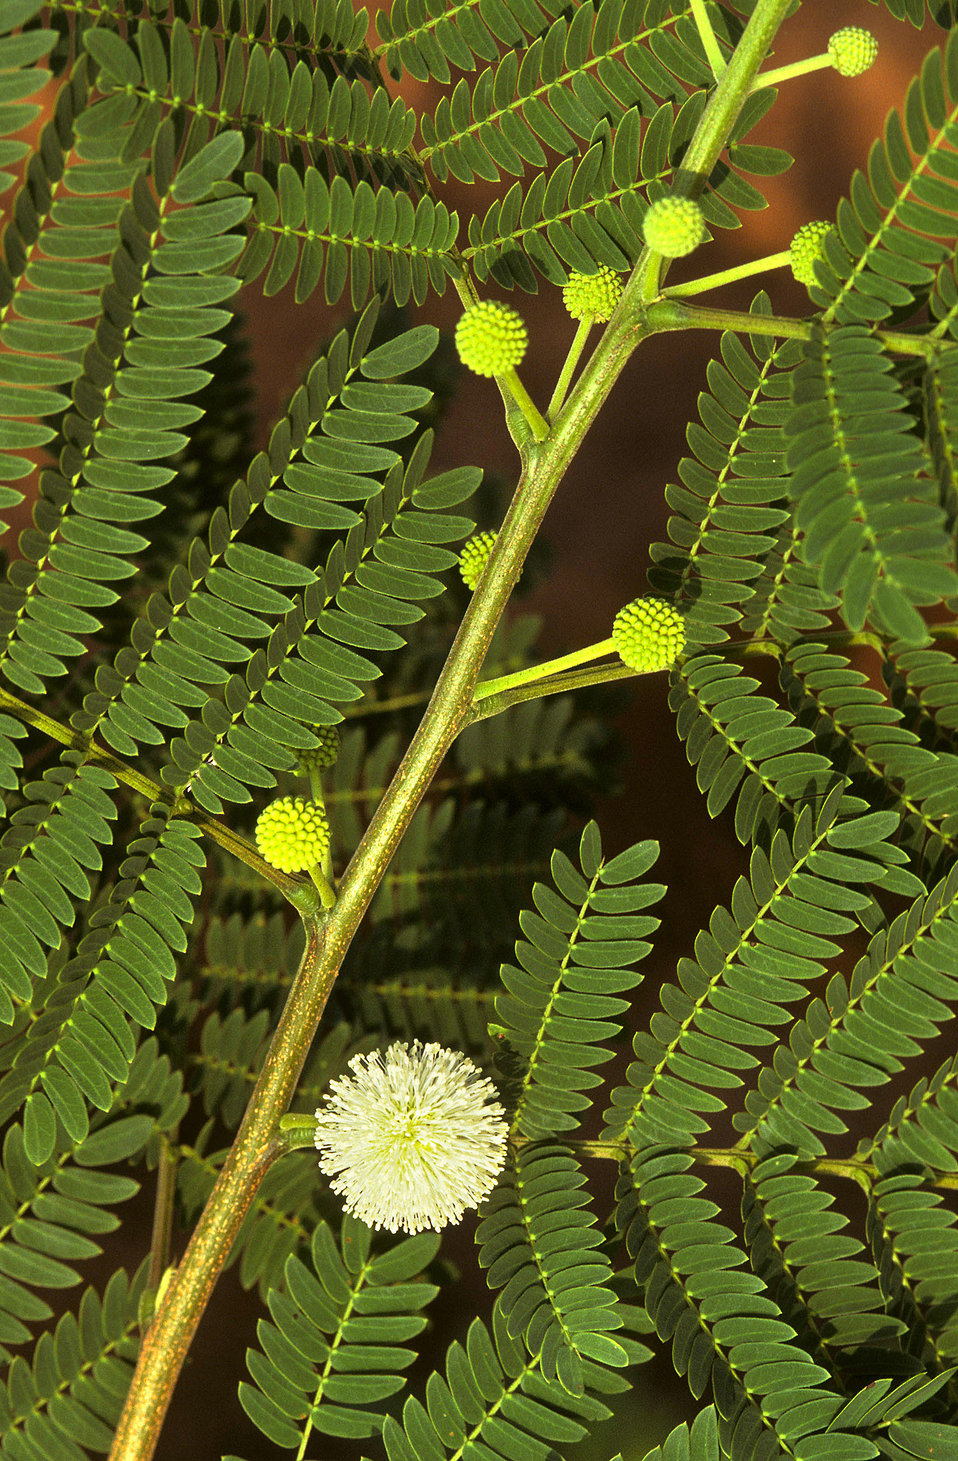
Lead tree (Leucaena leucocephala) is checked under field conditions for such traits as flower color, flowering date, pests, and maturity. The plant is used for fiber and livestock feed.